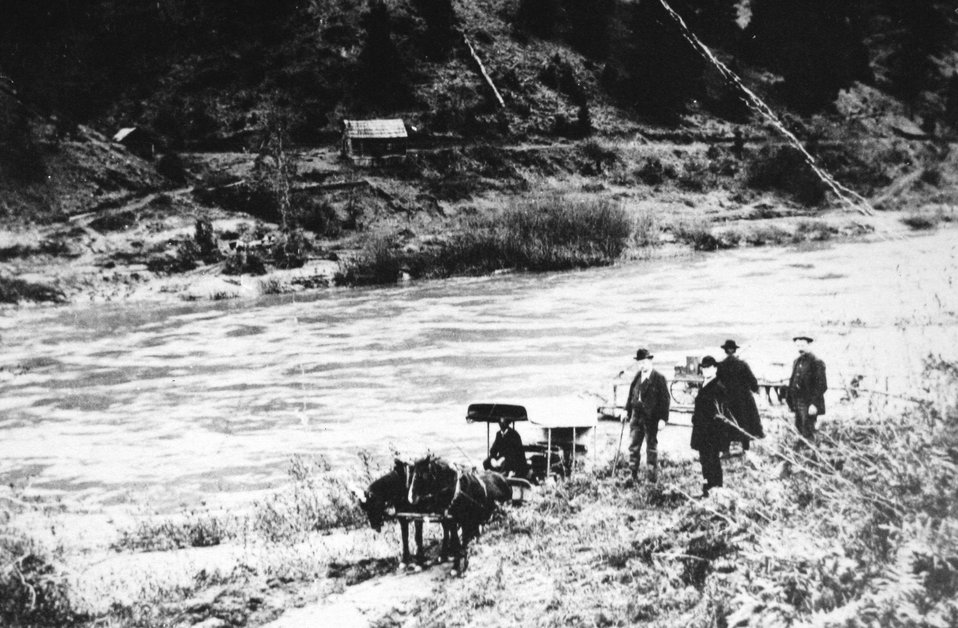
Massie Ferry